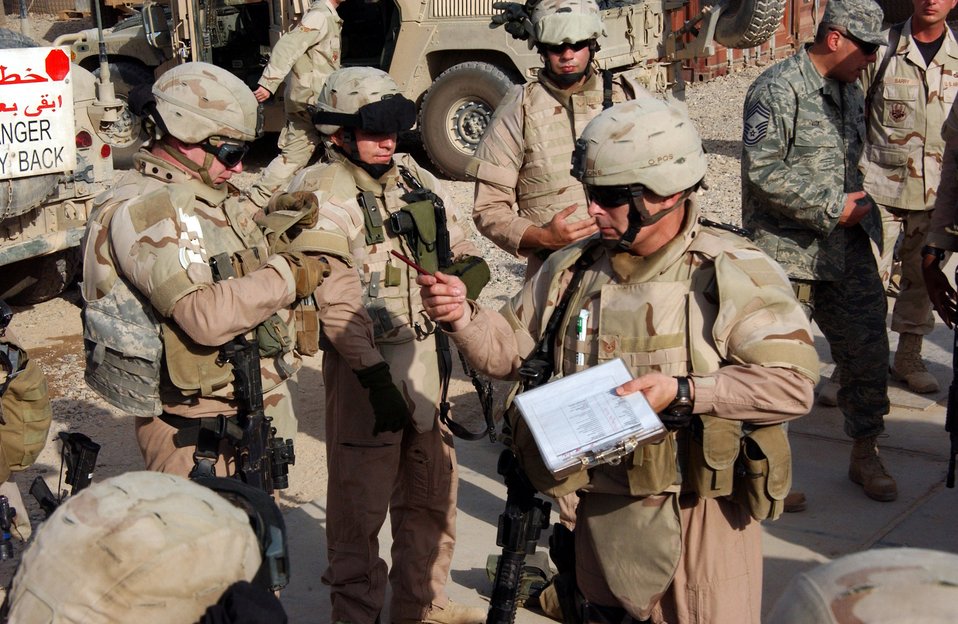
Airmen play key role in developing Iraqi police

Tech Sgt. Richard Blackstone conducts an equipment inventory with a Police Transition Team before a mission at Contingency Operating Base Speicher, Iraq. Sergeant Blackstone, a squad leader for a District PTT security team, ensures each member of the team has all equipment needed for the mission. Sergeant Blackston is assigned to the 732nd Expeditionary Security Forces Squadron Det. 1.